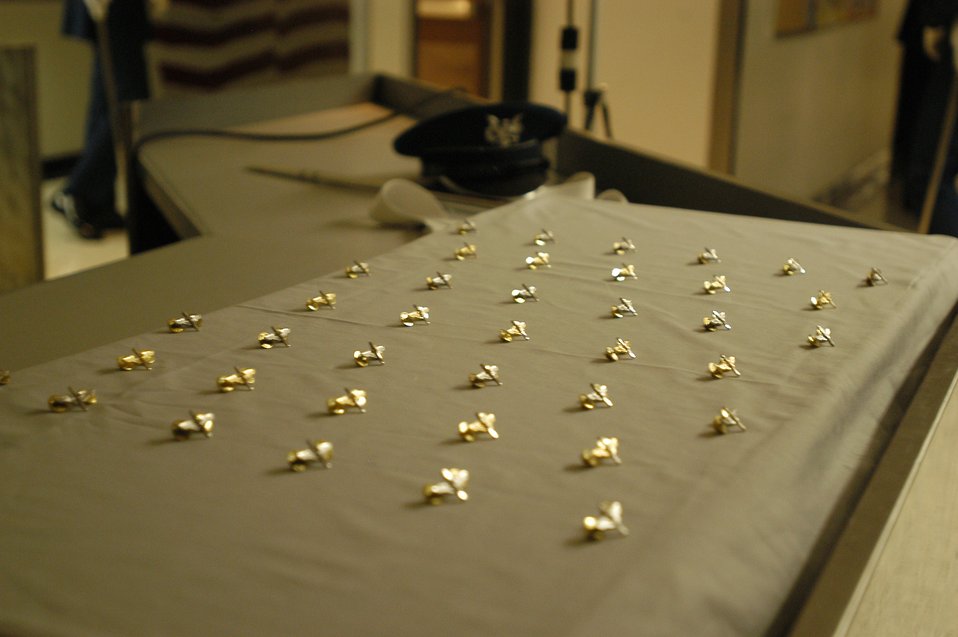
Class of 2009 formally recognized

The prop and wings pins were on display at the squadron when the fourthclassmen returned Saturday, March 18, 2006, at the U.S. Air Force Academy, Colo.